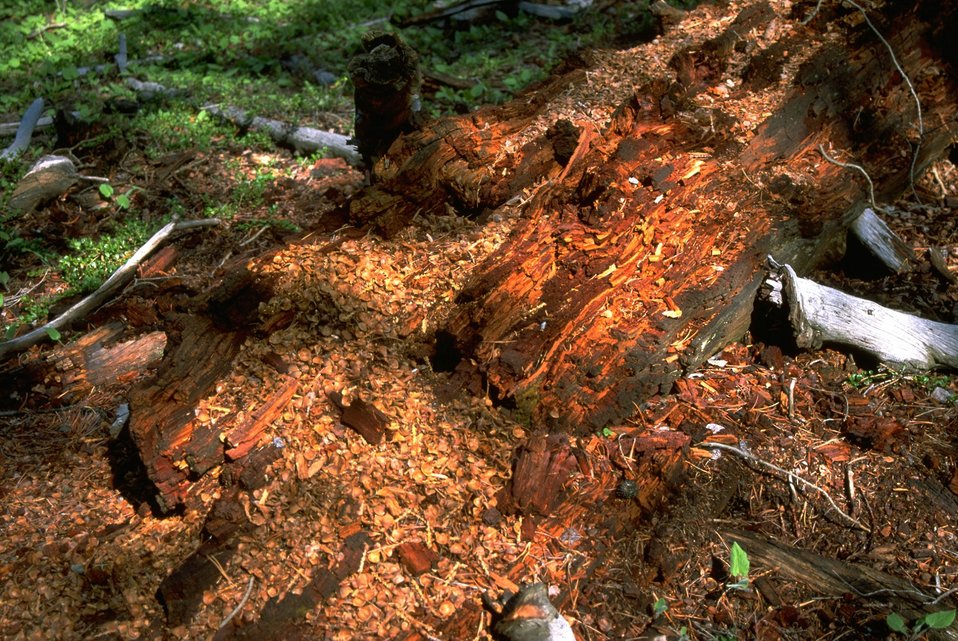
Squirrel cache in the Humbug Spires Wilderness Study Area